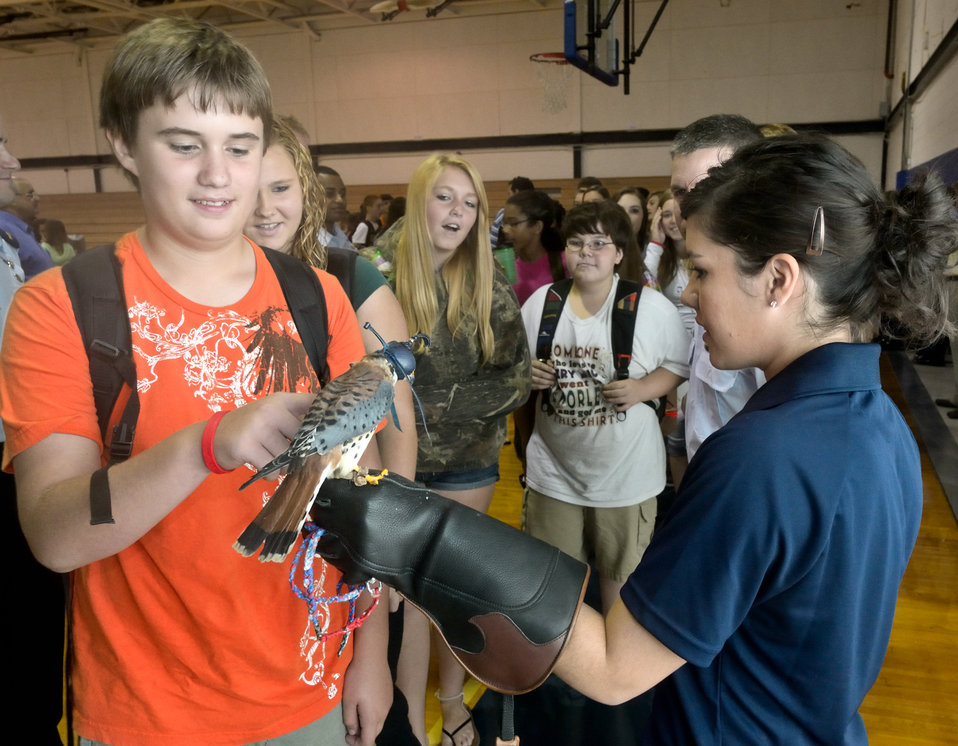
Small kestral captures school's attention

Students were able to individually meet Cadet 3rd Class Danielle Cortez and